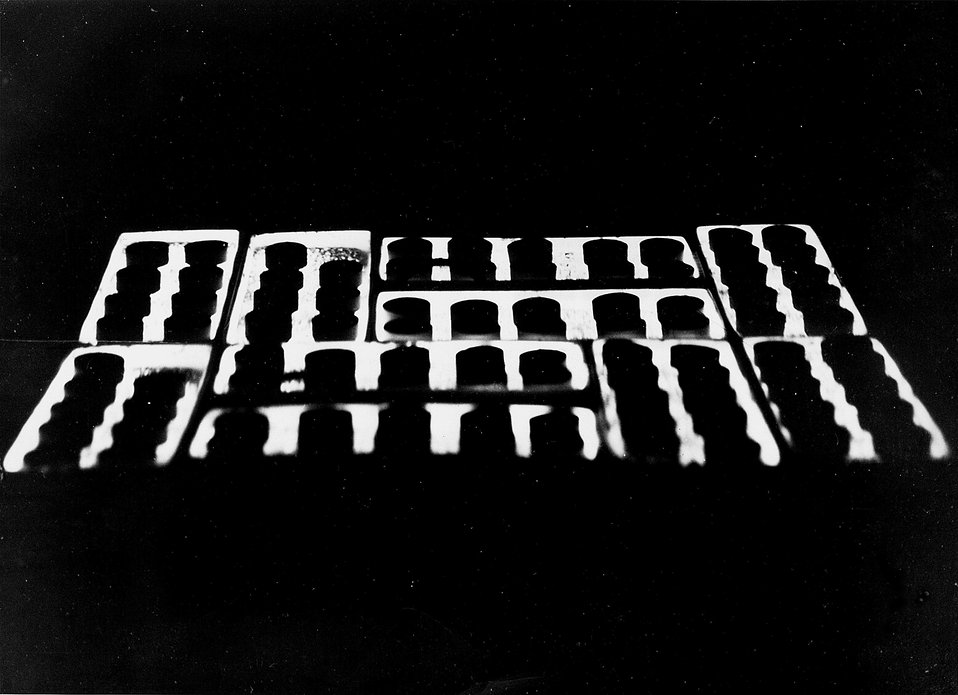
STRONTIUM 90 TITANATE PELLETS... The self-illuminated photo shows a portion of the 120,000 curies of strontium 90 titanate pellets that were installed in the SNAP-7D generator which will furnish electrical energy for the Navy's boat-type weather station.